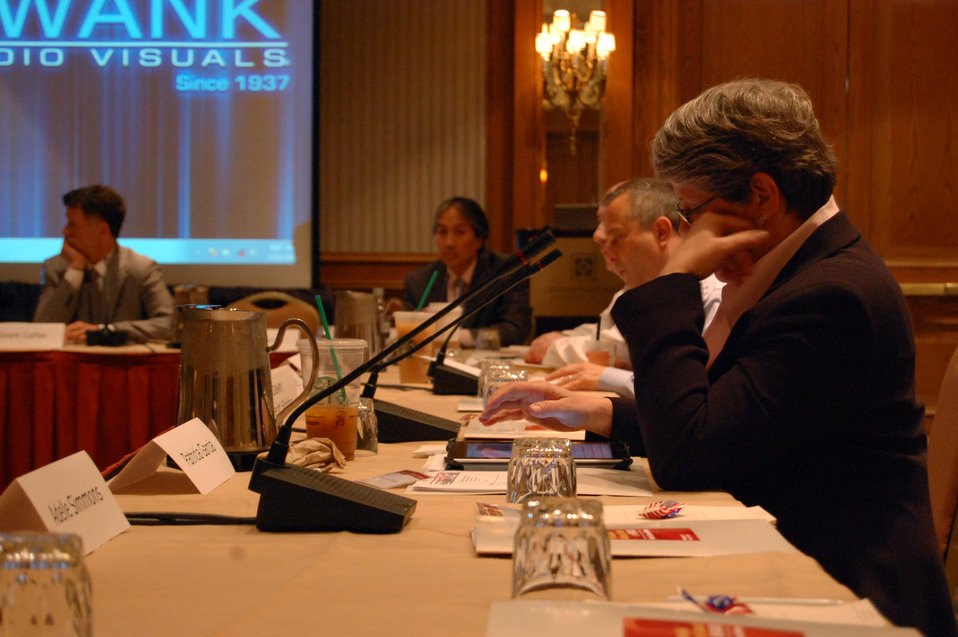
PACHA conf035